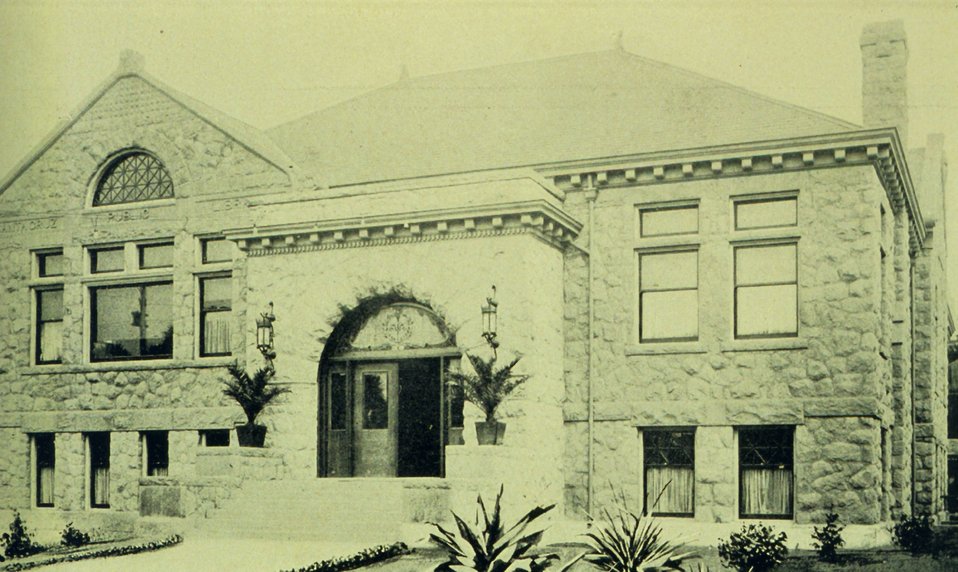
The Carnegie Library at Santa Cruz. In: 'The City of Santa Cruz and VicinityCalifornia.' Published by The Santa Cruz Board of Trade. 1905.